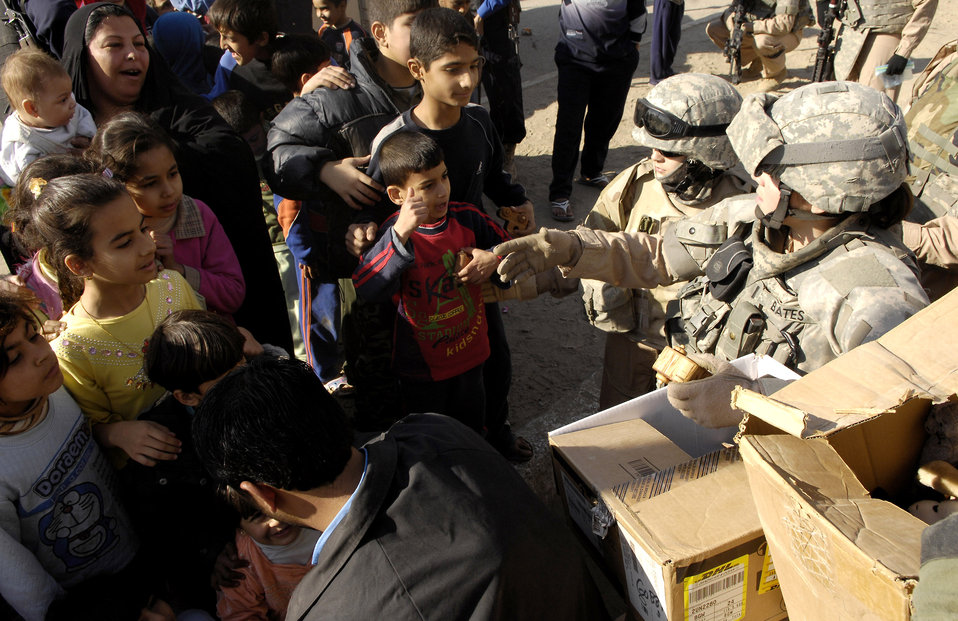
Toys for Iraqi tots

1st Lt. Cassandra Bates along with Iraqi police officers hand out toys to local children Dec. 18 during an Air Force security forces community relations outreach event. Security forces members from Det. 3 of the 732nd Expeditionary Security Forces Squadron, attached to the Army's 92nd Military Police Brigade, help train, mentor and coach the Iraqi police to help build a secure and independent Iraq.